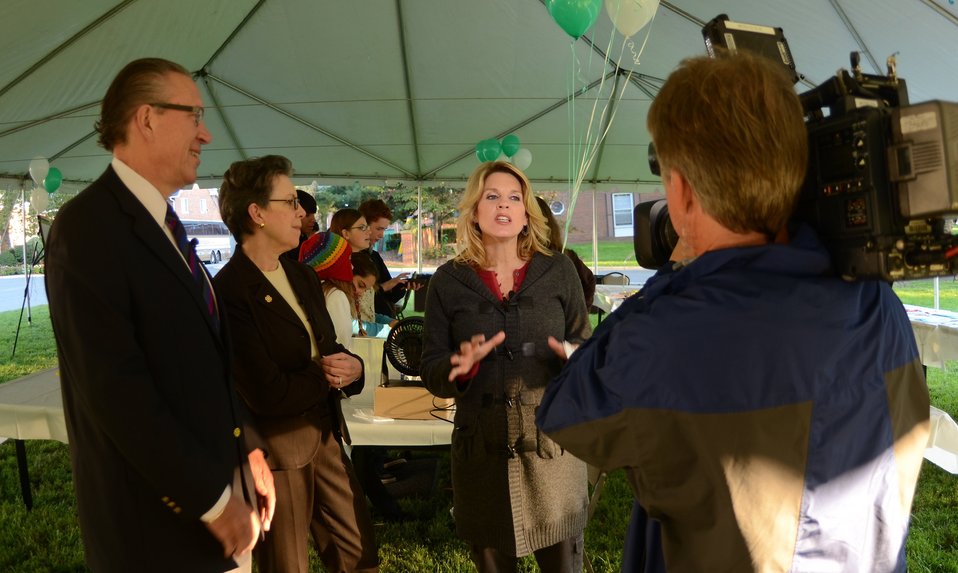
Left to right, Donald T. Floyd, Jr., President and CEO, National 4-H Council and Dr. Catherine Woteki, Under Secretary for Research, Education and Economics are interviewed by Fox WTTG reporter Holly Morris on the 4H campus in Chevy Chase, MD, on Wednesday, October 5, 2011.